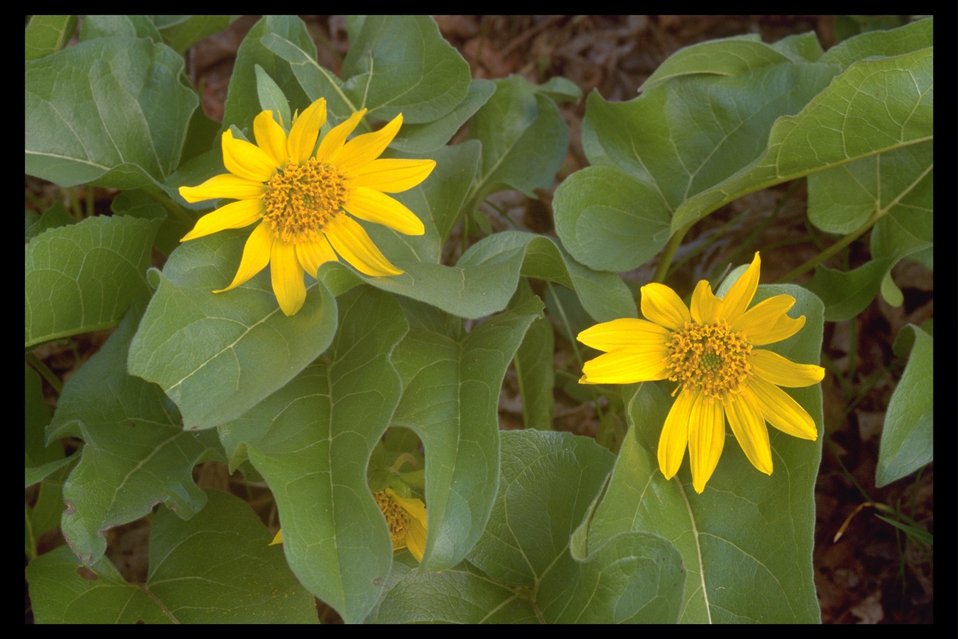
Balsam Root (Balsamorhiza deltoidea) found in Shady Cove.